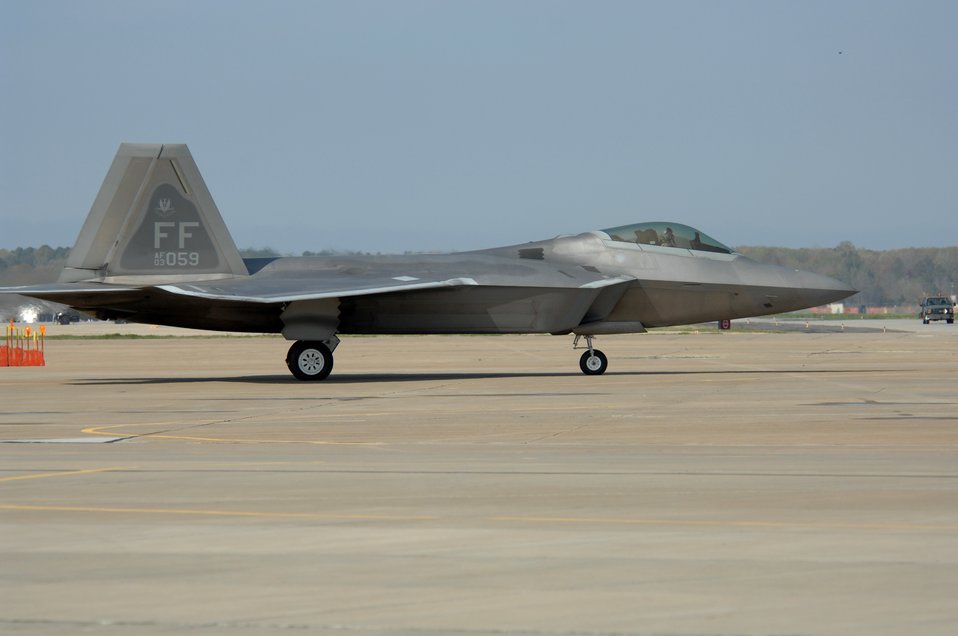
Operational readiness inspection

Maj. Jeremy Gordon taxis an F-22 Raptor to the runway April 10, 2011, during an operational readiness inspection at Langley Air Force Base, Va. Major Gordon is assigned to Air Combat Command Operations, Plans and Requirements.